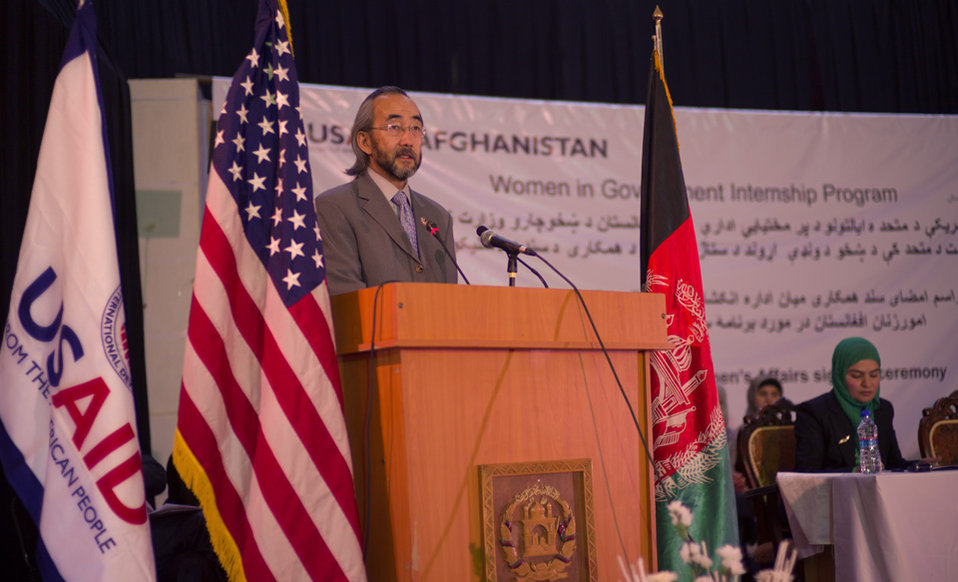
Ken Yamashita Speaking